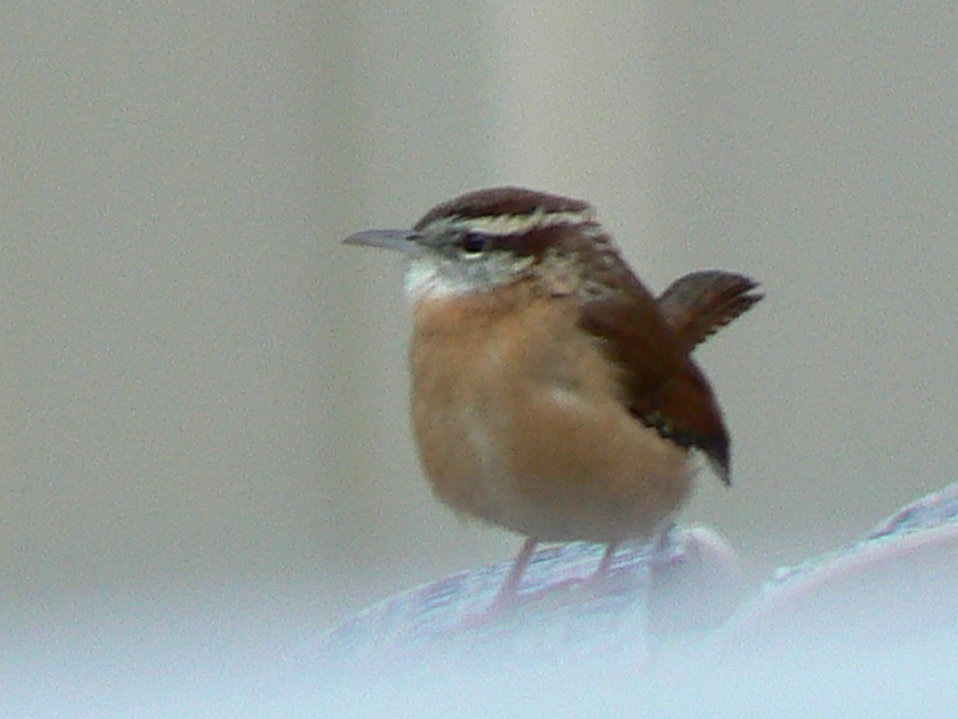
Carolina wren at Cape May National Wildlife Refuge.